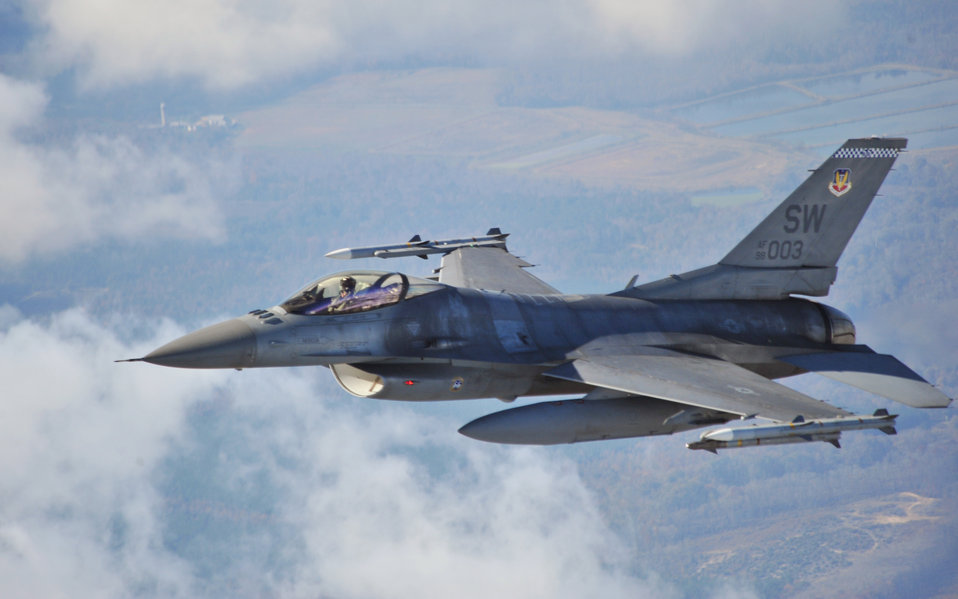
Alert mission protects U.S. airspace, interests

Capt. Matthew Feeman in an F-16 Fighting Falcon approaches a Cessna airplane, flown by South Carolina's Civil Air Patrol, to initiate a